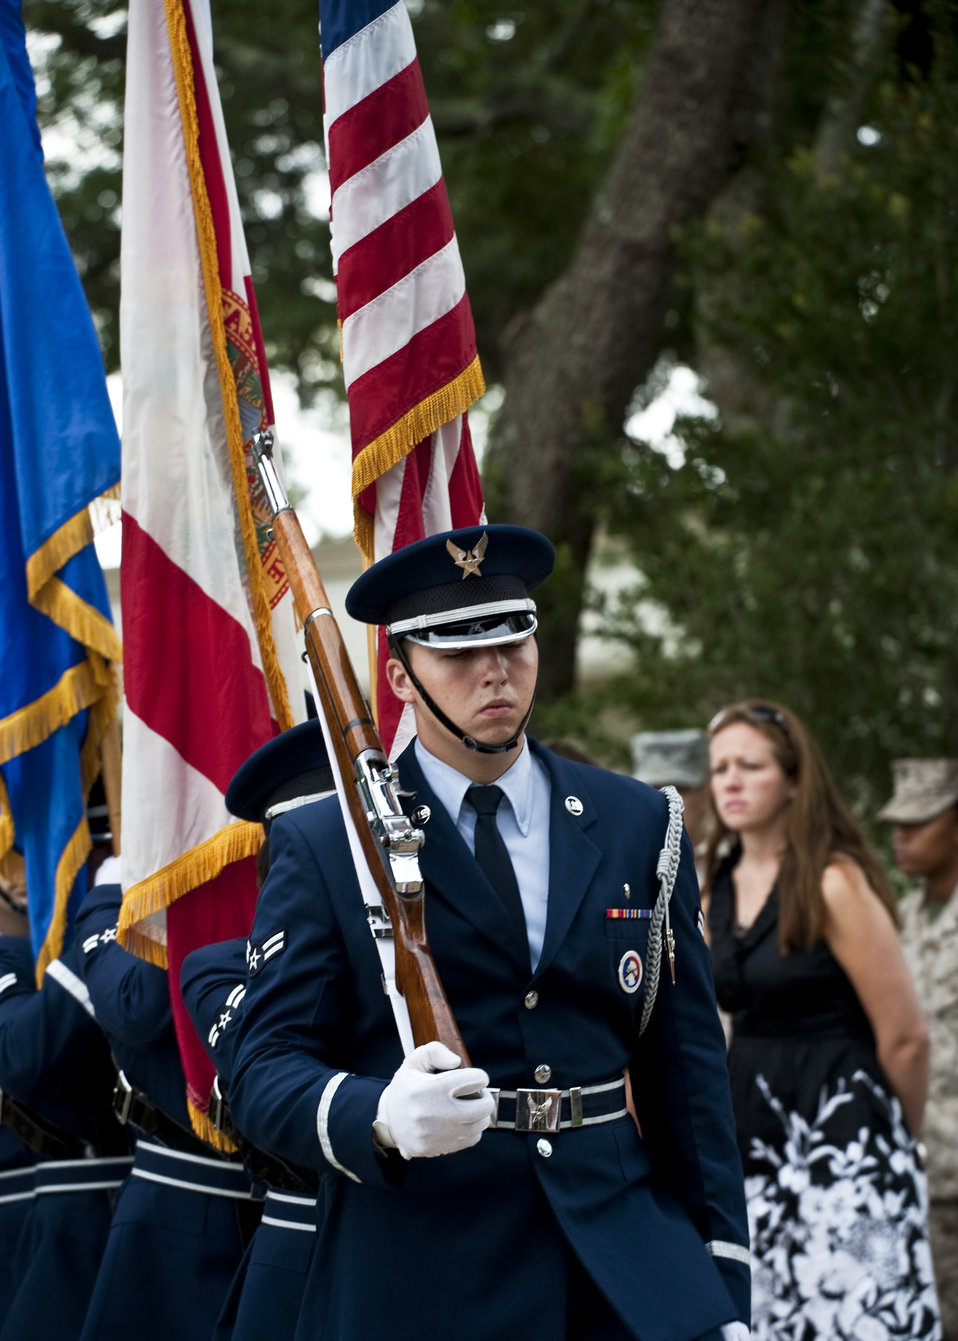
Khobar Towers memorial

Eglin Air Force Base honor guard members bring in the colors during the Khobar Towers Memorial ceremony June 24, 2011, at Eglin Air Force Base, Fla. June 25 marks the 15th anniversary of the bombing.